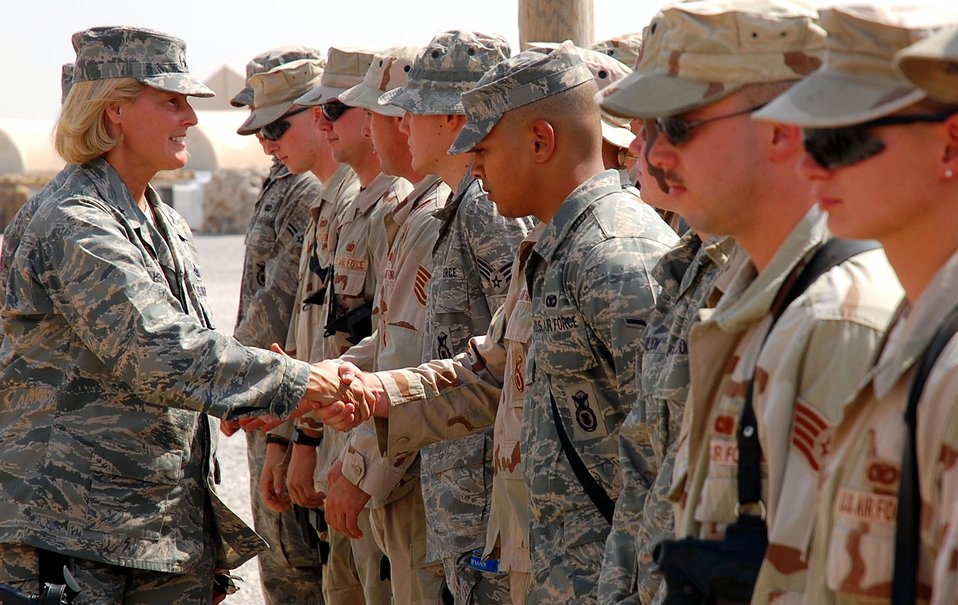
Top Cop visits deployed Airmen

Brig. Gen. Mary Kay Hertog visits with deployed Airmen to discussed deployment tempos, training and the future of the career field Oct. 10 at Camp Bucca, Iraq. General Hertog is the Air Force Security Forces director.